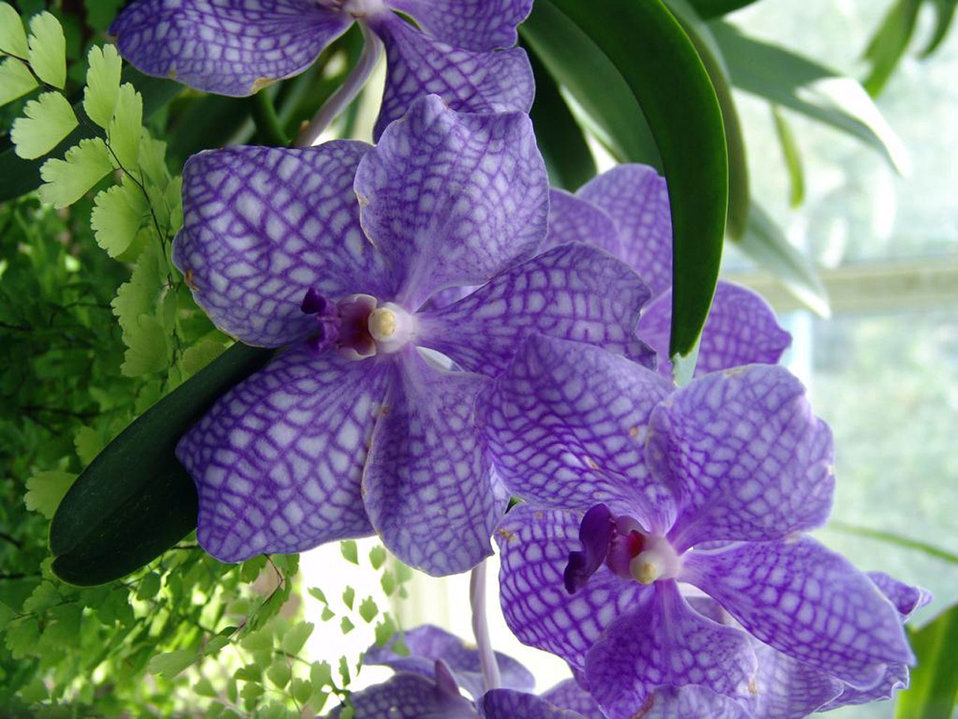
Orchid

Purple orchid.